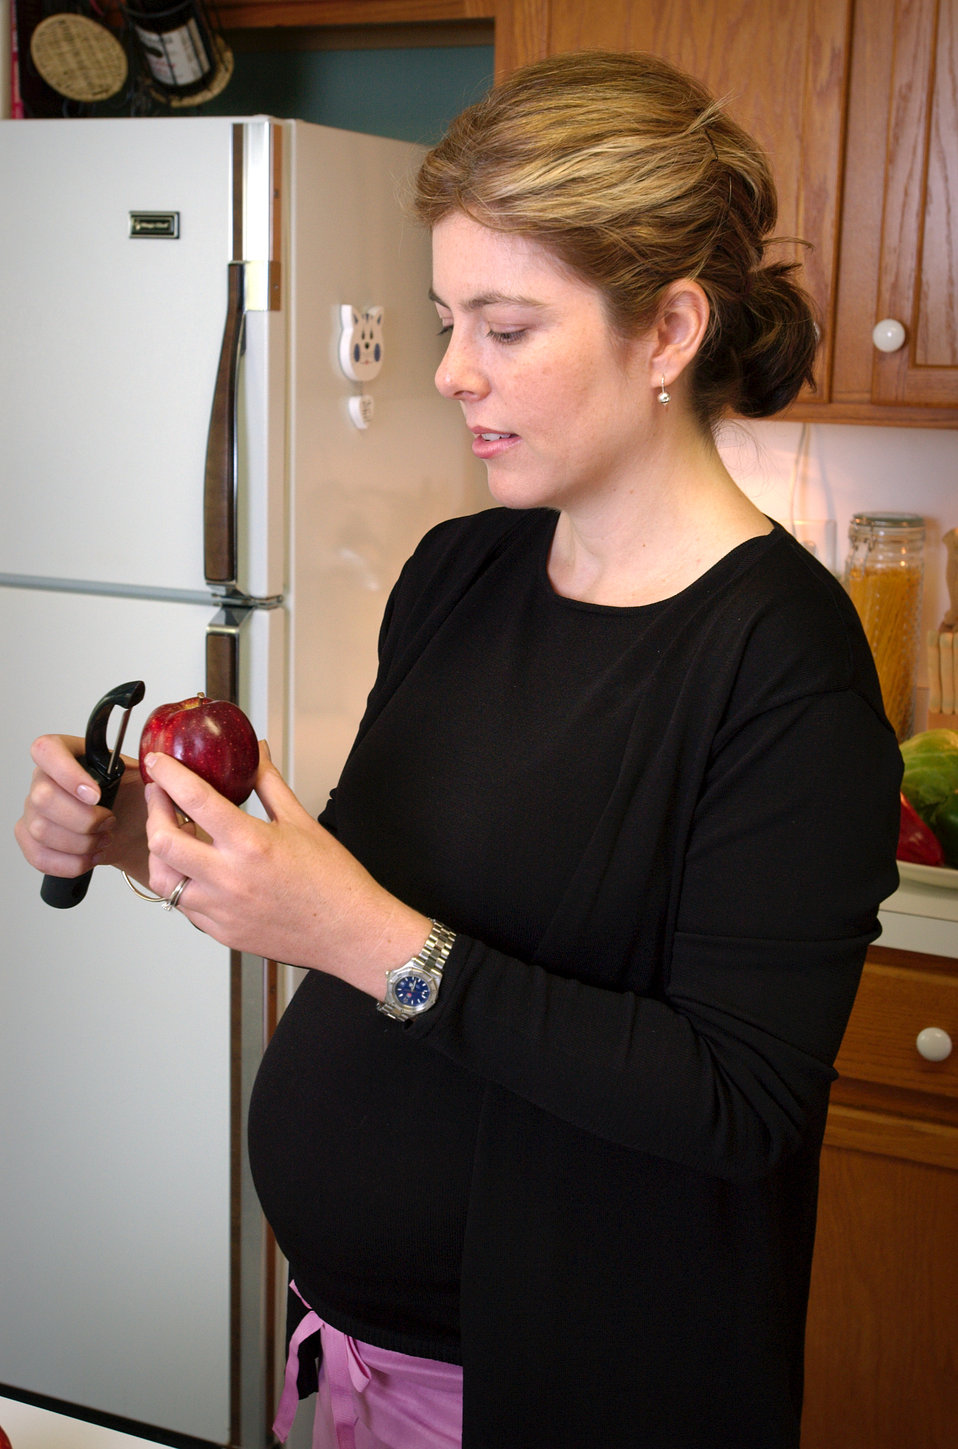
This photograph depicted a pregnant woman in the process of peeling an apple using a peeling implement after having washed a batch of apples in the kitchen sink. In order to avoid acquiring possible foodborne illness from eating a peeled food, one should wash such a food in warm soapy water prior to peeling, which will greatly reduce the chances of introducing a foodborne pathogen to the fruit's clean interior.Foodborne disease is caused by consuming contaminated foods or beverages. Many different disease-causing microbes, or pathogens, can contaminate foods, so there are many different foodborne infections. In addition, poisonous chemicals, or other harmful substances can cause foodborne diseases if they are present in food.